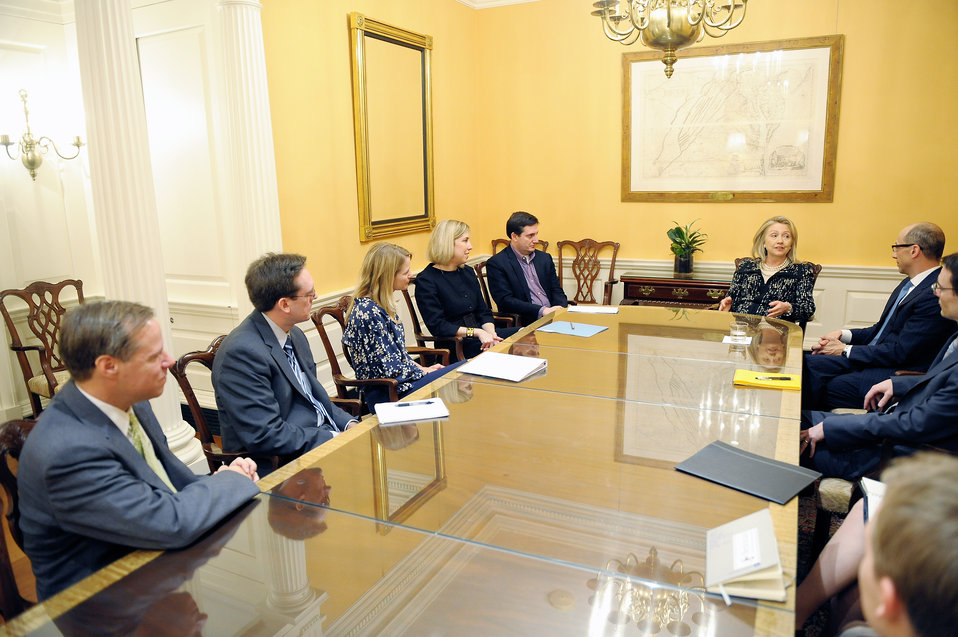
Secretary Clinton Meets With Twitter CEO Costolo

U.S. Secretary of State Hillary Rodham Clinton meets with Dick Costolo, CEO at Twitter, at the U.S. Department of State in Washington, D.C., April 27, 2012.